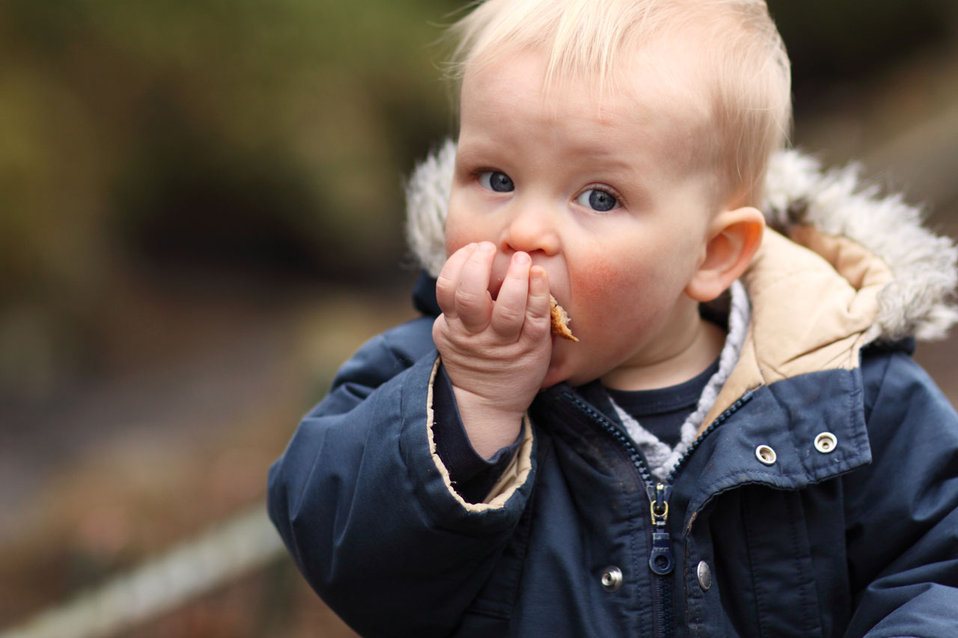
Boy eating bread

Little boy could not resist this yummy bread (originally brought for ducks in park).